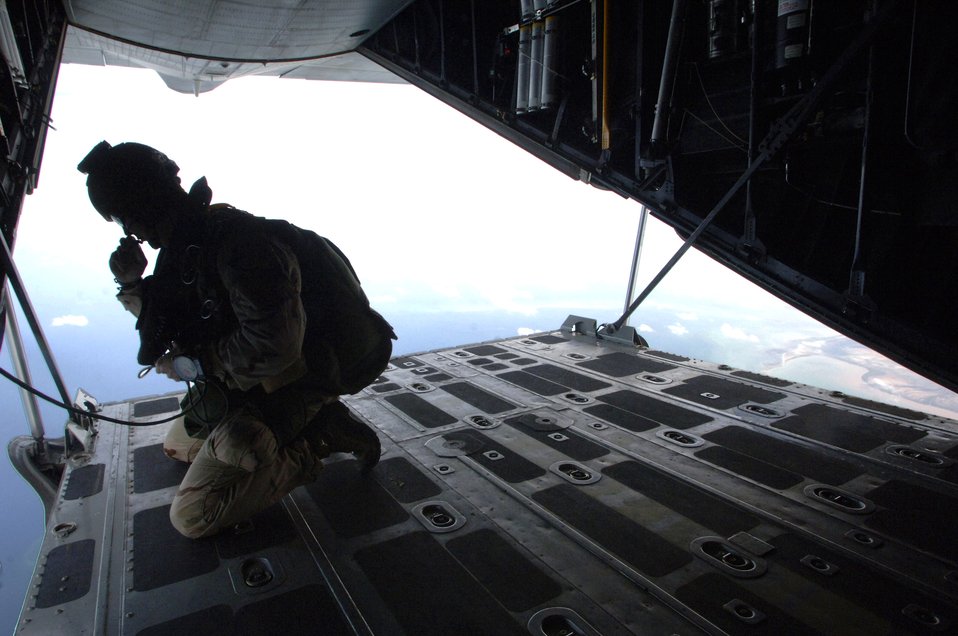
Pararescue jumpers train 'that others may live'

A pararescue jumper scans for an approaching drop zone and performs a communications check before free-falling from 10,000 feet from a C-130 Hercules above Camp Lemonier, Djibouti.